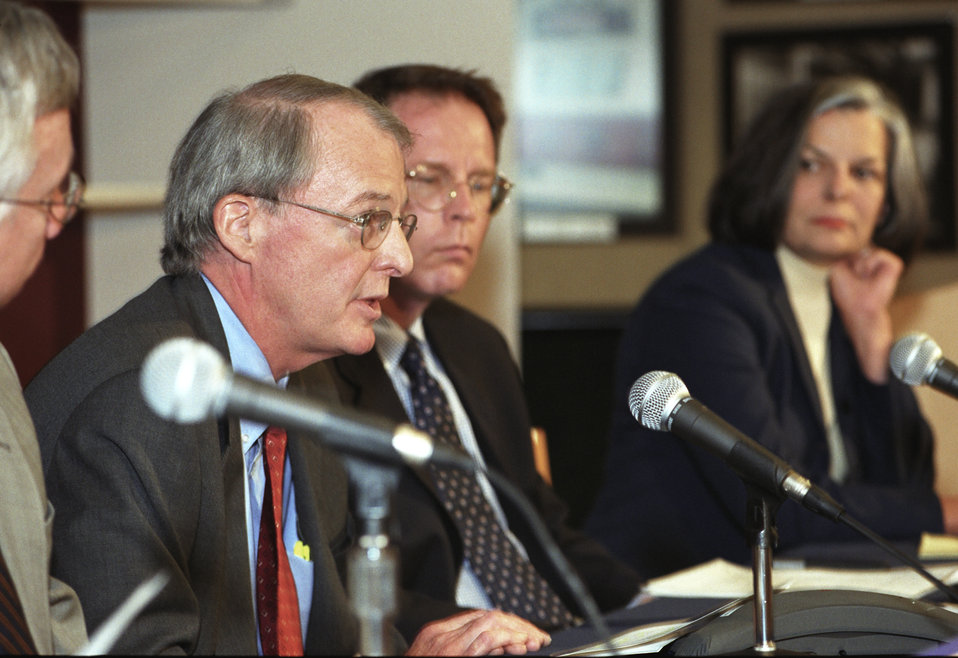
Centers for Disease Control and Prevention Bioterrorism Preparedness Press Briefing, August 27, 2002.